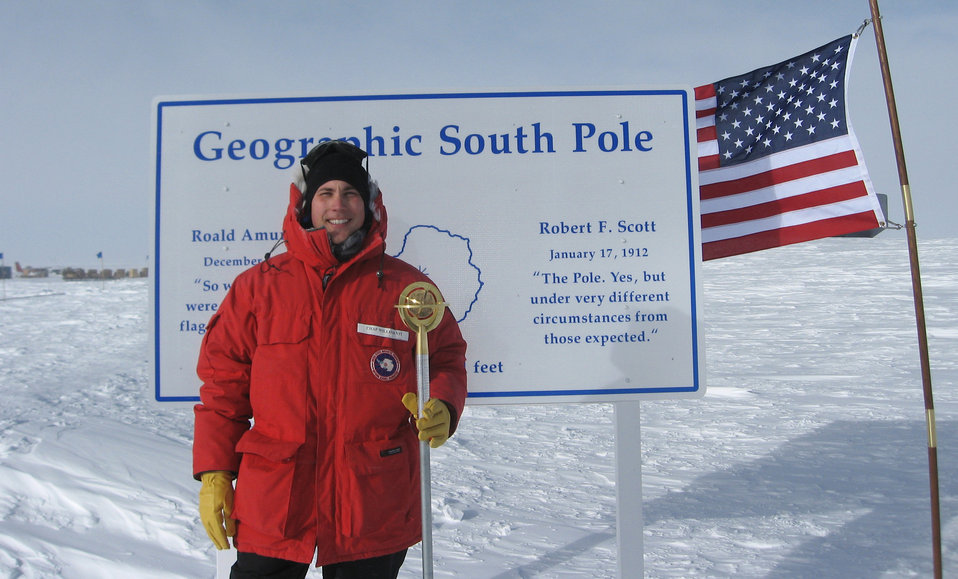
Ice-cold chaplain

Chaplain William Vit of Sioux City, Iowa, stands at the geographic South Pole. Vit, a priest at the Cathedral of the Epiphany in Sioux City and a member of the Iowa Air National Guard's 185th Air Refueling Wing, is in the Antarctic for a two-month deployment with the National Guard in support of Operation Deep Freeze.